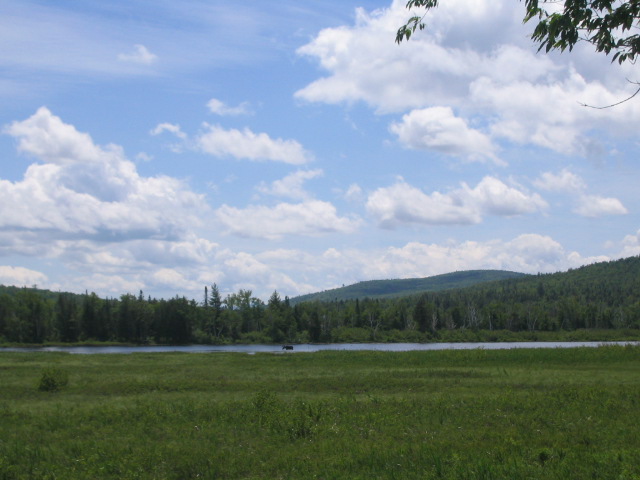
Moose at Umbagog National Wildlife Refuge